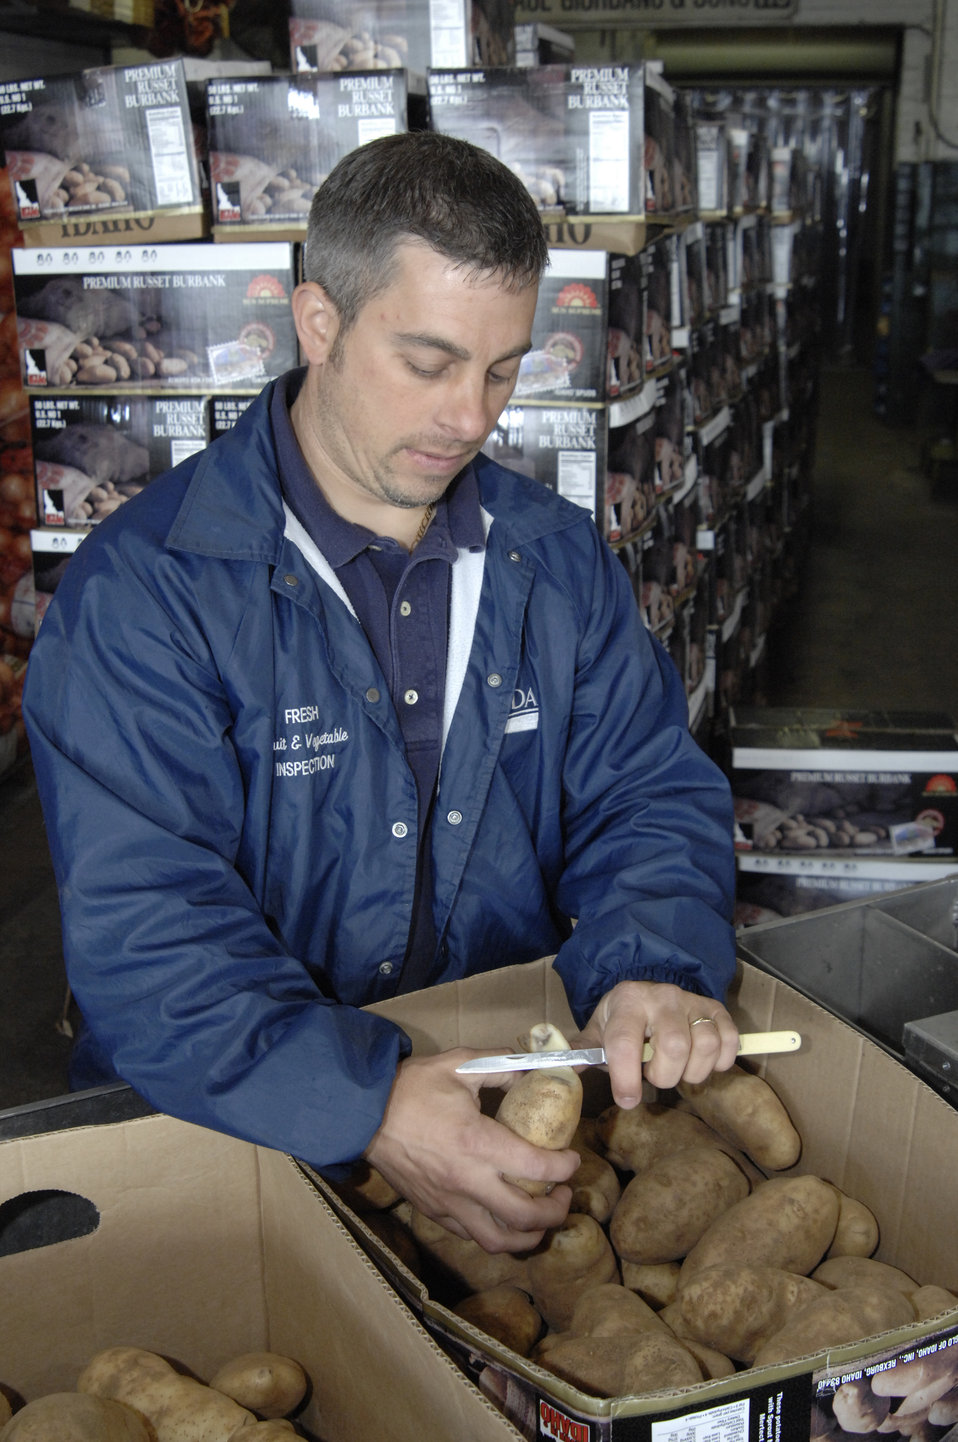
U. S. Department of Agriculture (USDA) Agricultural Marketing Service (AMS) inspectors Geno DeSanto examines potatoes at the Philadelphia Food Distribution Center in Philadelphia, Pennsylvania on May 21, 2008. USDA photo,